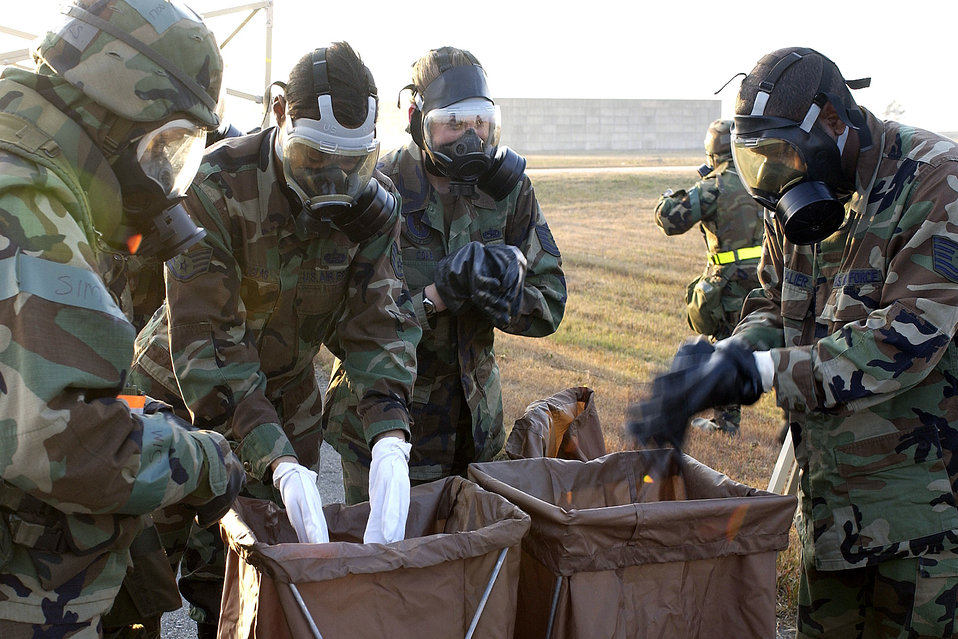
Testing readiness at Kunsan

Airmen dispose of their contaminated gears during the Peninsula Operational Readiness Exercise Nov. 7 at Kunsan Air Base, South Korea. The exercise was conducted to ensure base members remain ready to execute its mission.